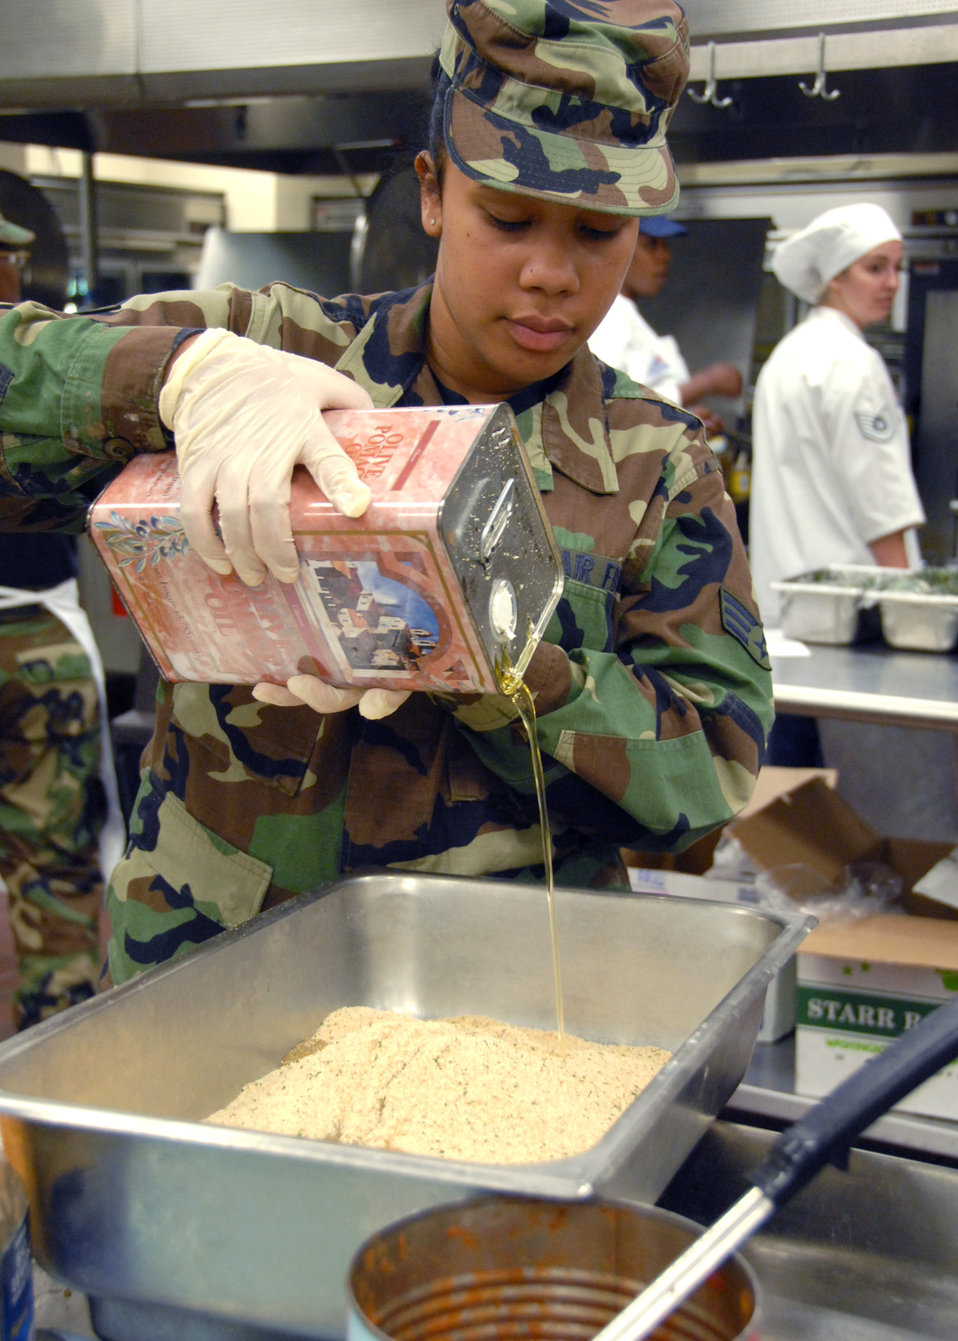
SVS PB

Senior Airman Brittnie Lewis pours oil into a breading mix recently at the Duke Field, Fla. dining facility. The 919th SVF inactivated Oct. 15, 2010, and reservists in the flight joined the newly created 919th Force Support Squadron. Airman Lewis is with the 919th Services Flight.